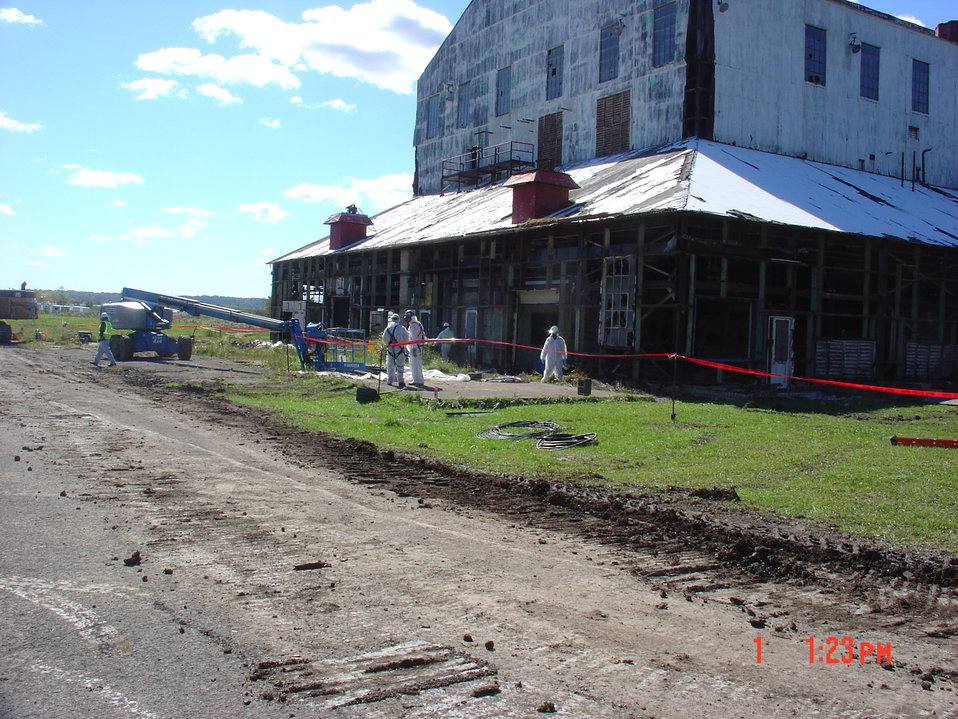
BLDG 401 SIDING REMOVAL CONTINUED

Activities from the Niagara Falls Storage Site, which is associated with the former Lake Ontario Ordnance Works. Formerly Utilized Sites Remedial Action Program (FUSRAP), a program initiated in 1974 to identify, investigate and clean up or control sites that were part of the Nation's early atomic energy and weapons program. Activities at the sites that are eligible for FUSRAP were conducted by Manhattan Engineer District (MED) or the Atomic Energy Commission (AEC), both predecessors of the Department of Energy (DOE). The U.S. Army Corps of Engineers was assigned management of FUSRAP by Congress in 1997.